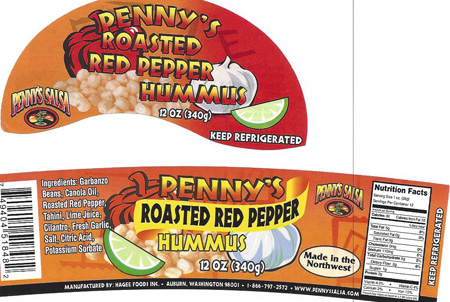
RECALLED – Hummus

July 16, 2013 – Product Recall – Hagee Foods Inc. dba Penny's Salsa Inc. Recalls Hummus Products Because of Possible Health Risk.